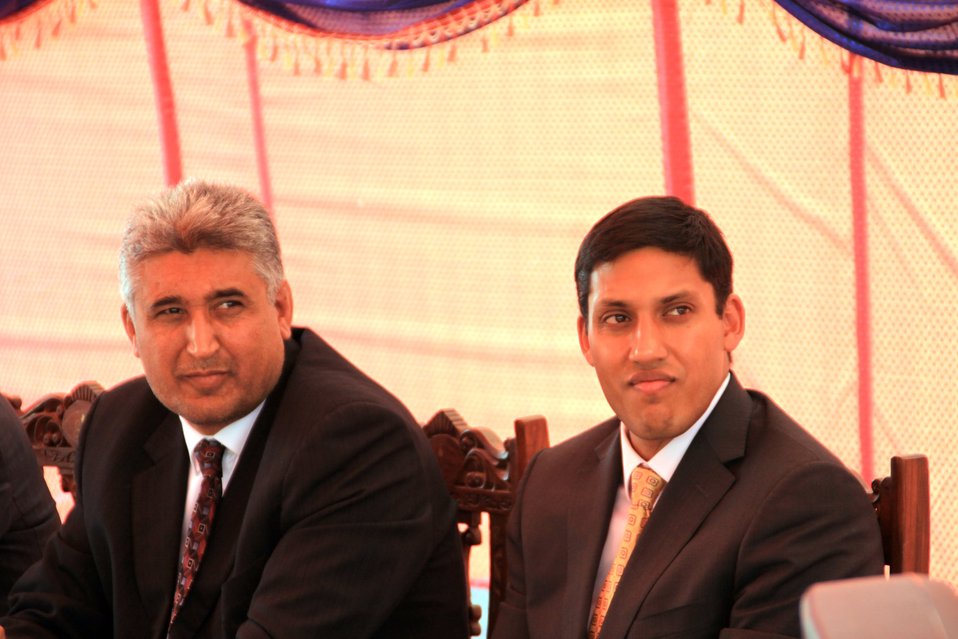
Badam Bagh Farm